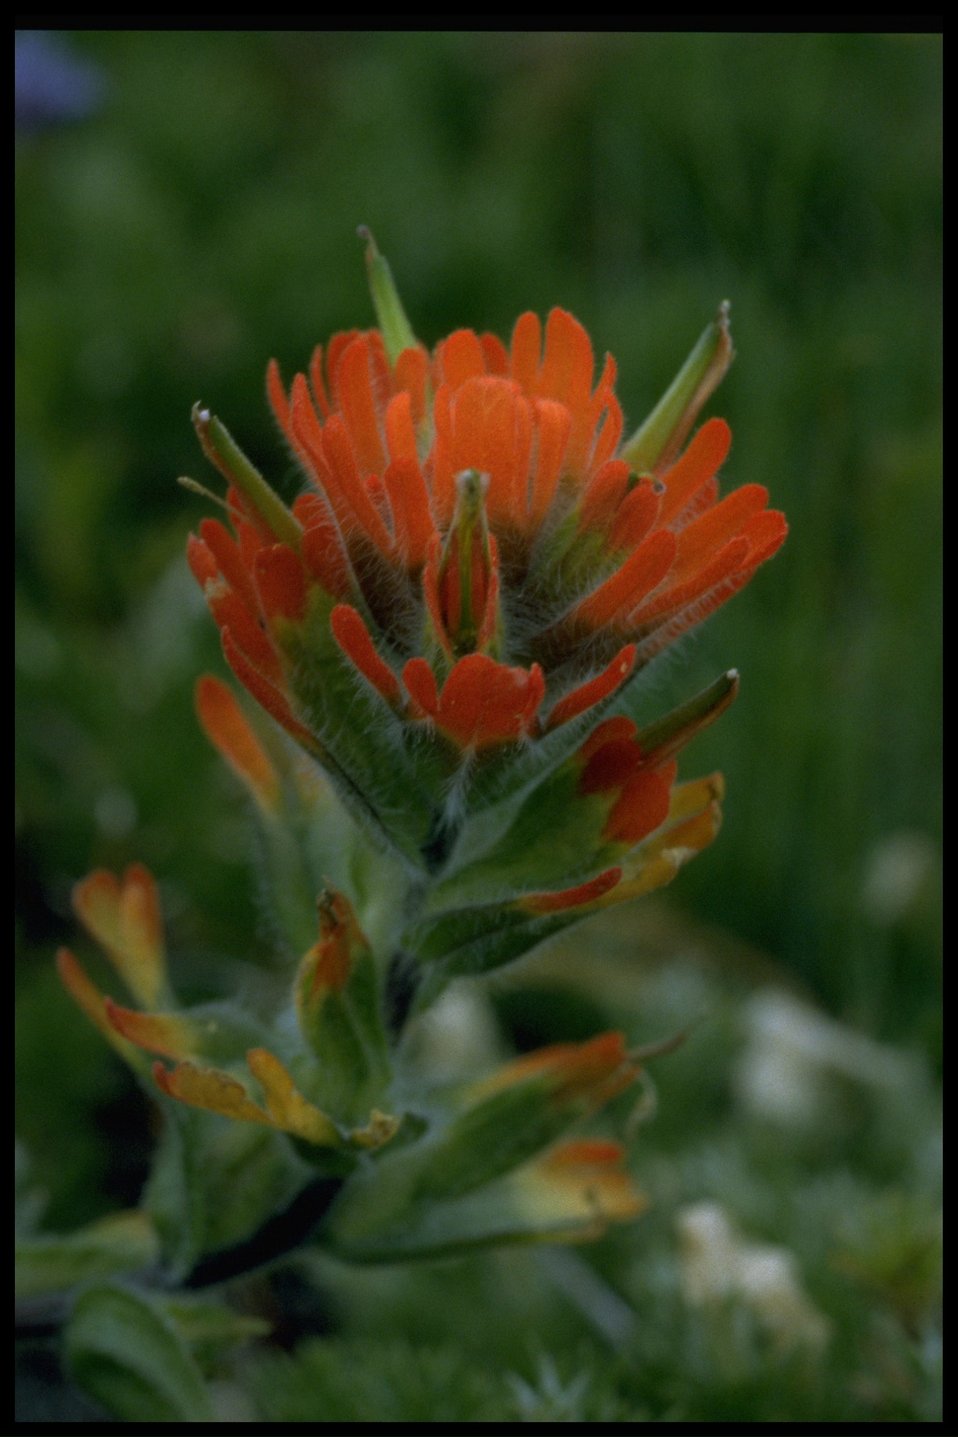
Closeup of wildflower (genus Castilleja).